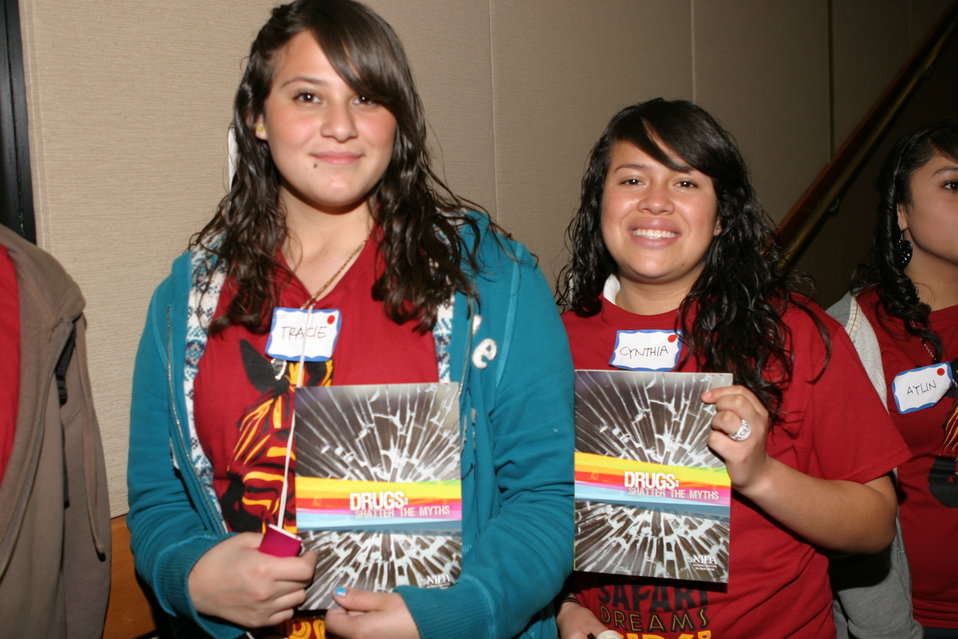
Kids Day 2011 - Substance Abuse

Kids Day at the USC School of Pharmacy. Around 120 kids from El Sereno Middle School participated this event.